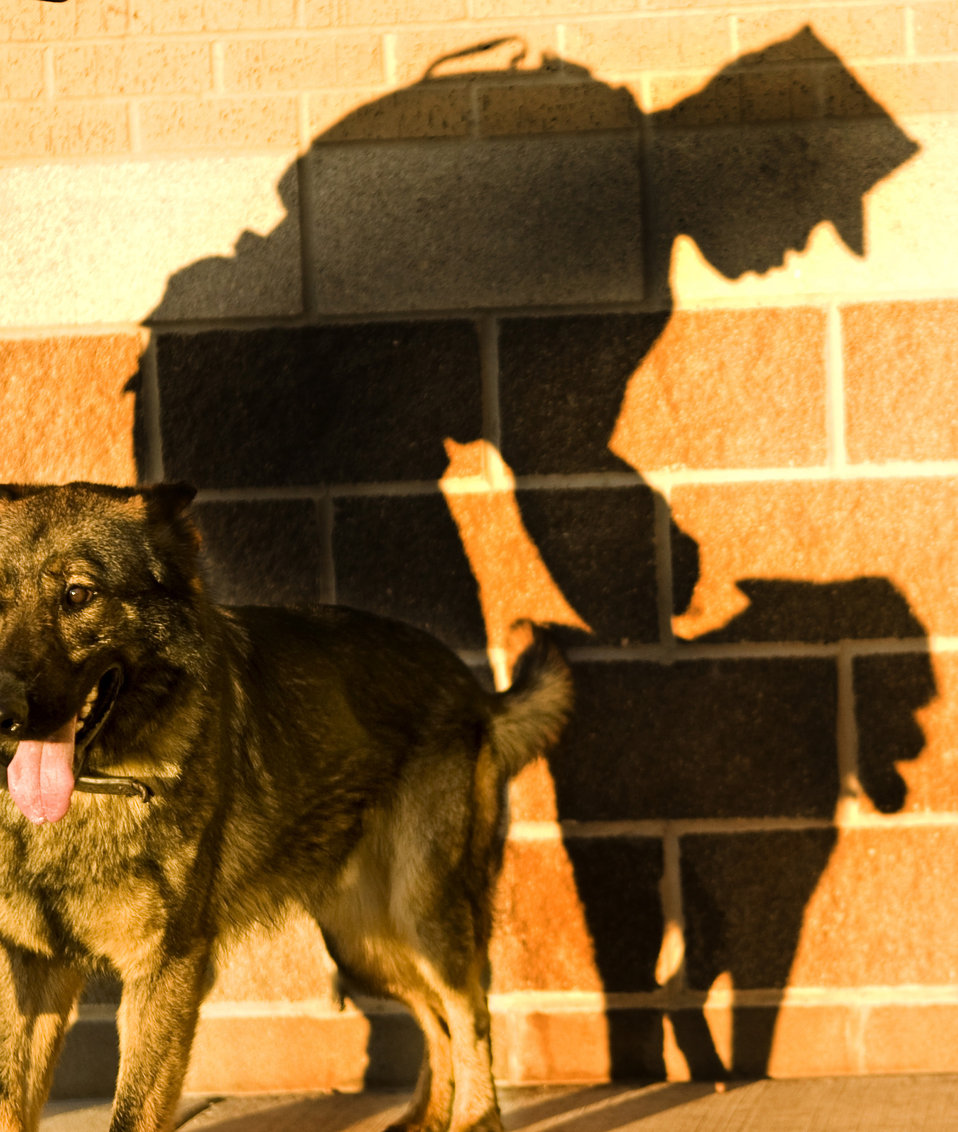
Training for military working dogs

A handler begins to muzzle his military working dog before entering the Military Working Dog Hospital for a check up on Lackland Air Force Base, Texas.